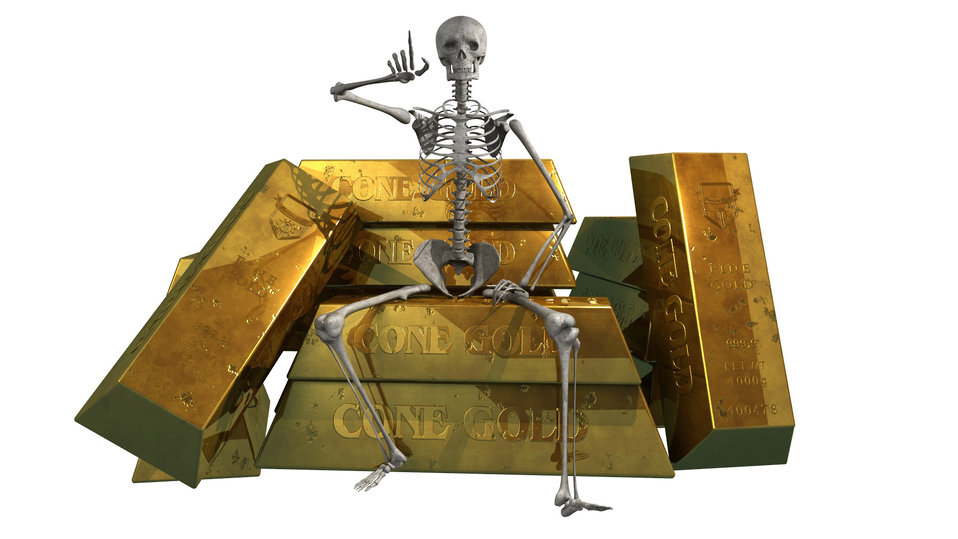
Skeleton and gold

3d animation of the human skeleton in the gold bullion.